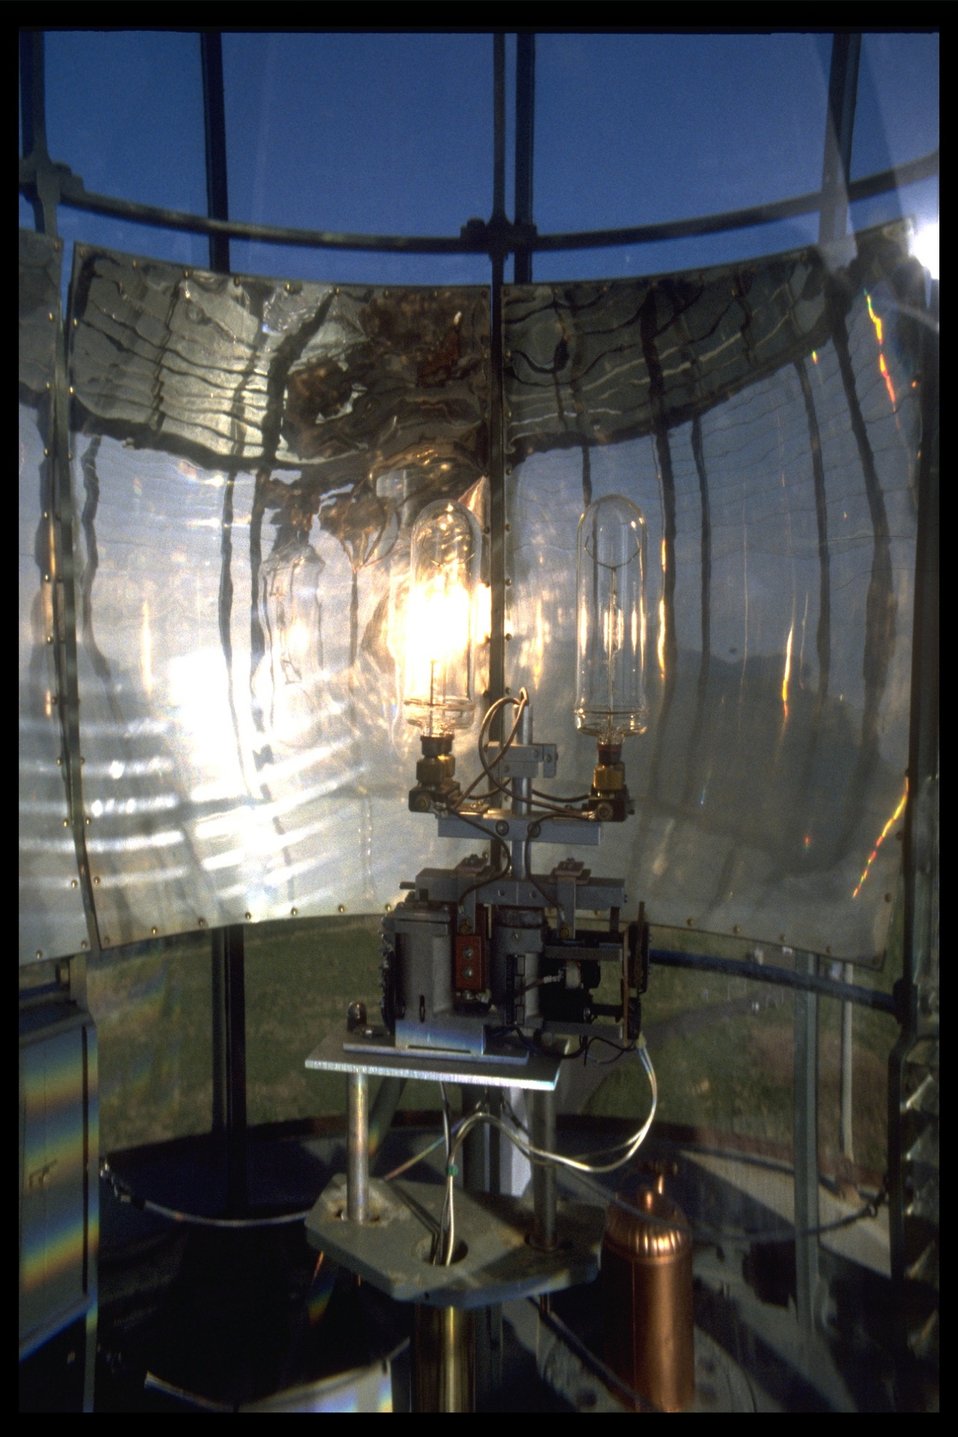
The lightbulb (1000 watt lens) on the interior of the Yaquina Head lighthouse.